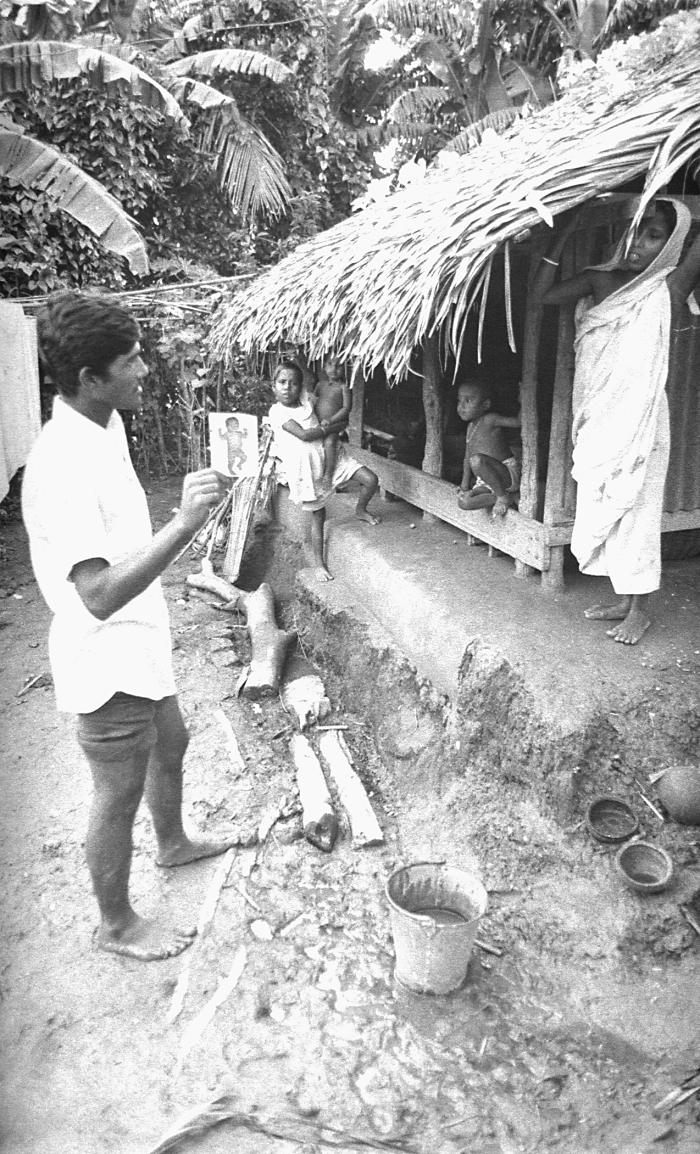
During his house to house search for possible smallpox cases, this Bangladesh smallpox eradication team volunteer was photographed while he was discussing this viral disease with a mother, and her children, who were just as important as the adult family members in these discussions.It was deemed quite important to discuss the disease with the community children. In fact, the last known occurring case of the illness, i.e., variola major, involving a young girl named Rahima Banu, was reported by an 8 year old girl named Bilkisunnessa.